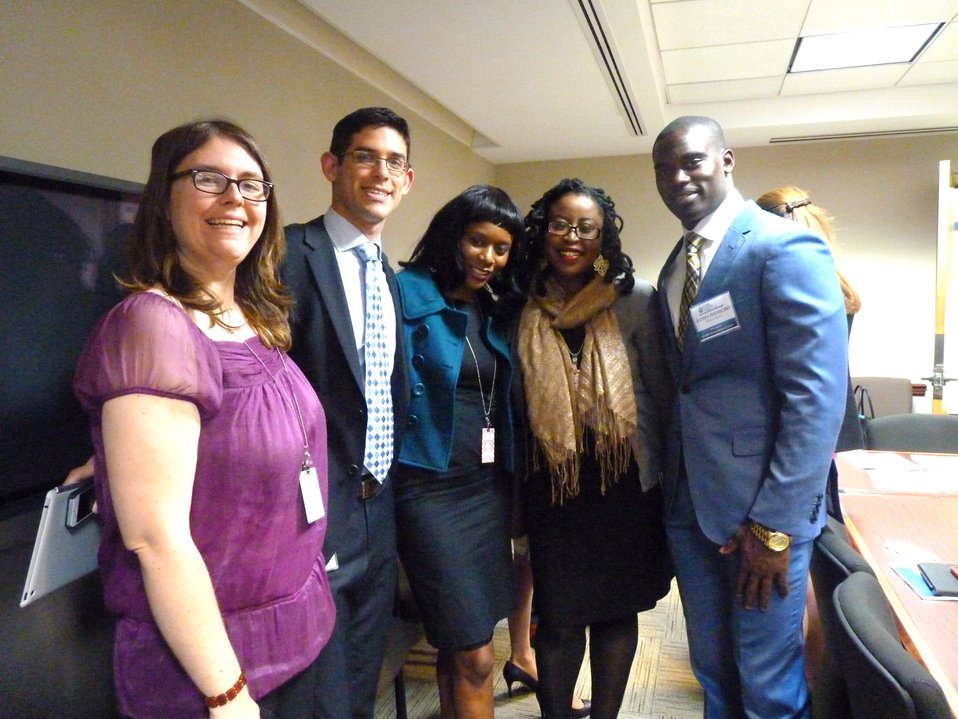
GDF Meetup Participants Chat With James Ihedigbo

Participants of the Global Diaspora Forum (GDF) Meetup chat with James Ihedigbo, an NFL player for the Baltimore Ravens and founder of HOPE Africa, at the U.S. Department of State in Washington, D.C., on May 14, 2013.